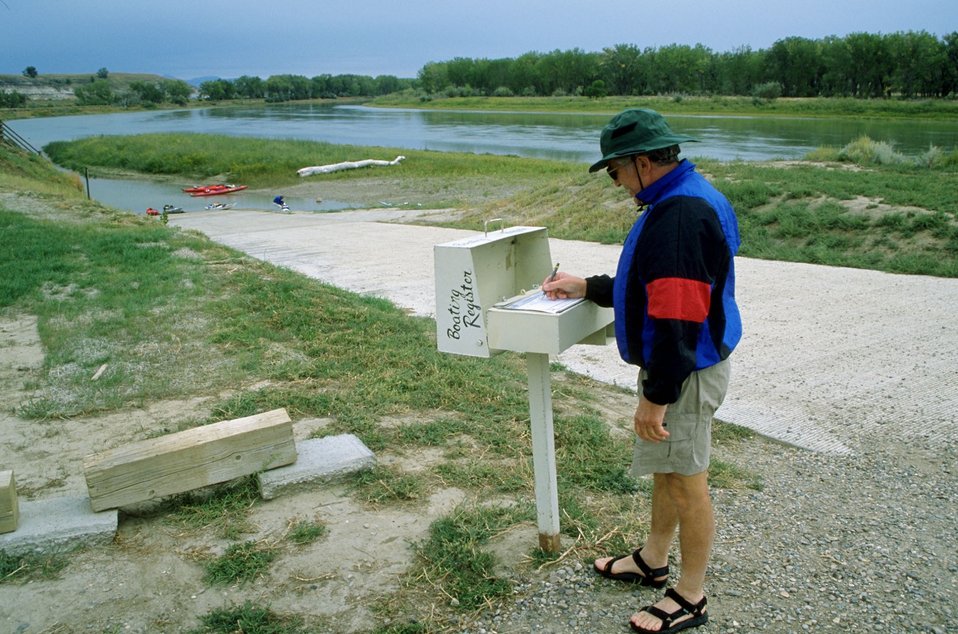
Visitor use at Coal Banks Landing on the Upper Missouri River